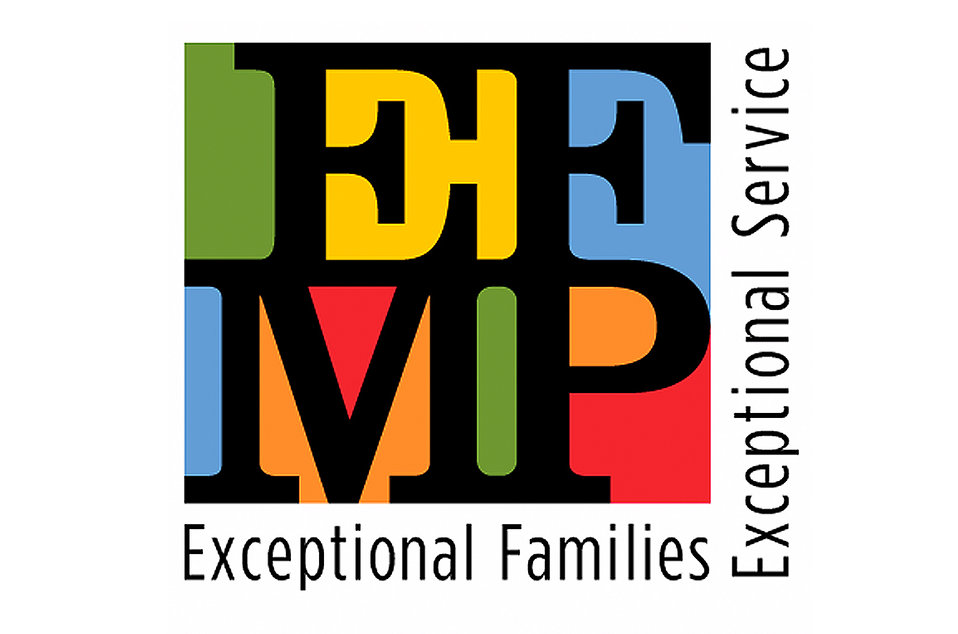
Exceptional Families Exceptional Service Logo